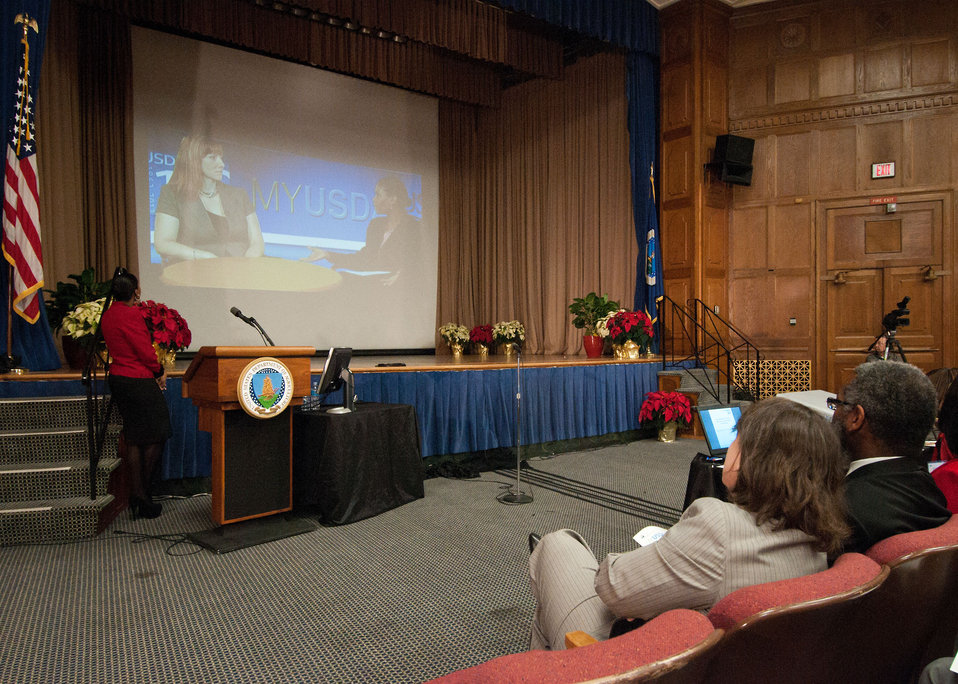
(L to R) Agriculture Office of Communications Mistress of Ceremonies Susan Carter, Agriculture Deputy Secretary Dr. Kathleen Merrigan, and Agriculture Acting Assistant Secretary for Administration Dr. Gregory Parham watch a “USDA Today TV Series” segment during the U.S. Department of Agriculture’s Fourth Annual Cultural Transformation event held in Washington, D.C. on Tuesday, Dec. 4, 2012. The theme for the event “Faces of Cultural Transformation” Focusing on changing the way we serve our customers and cultural transformation’s benefits to employees.